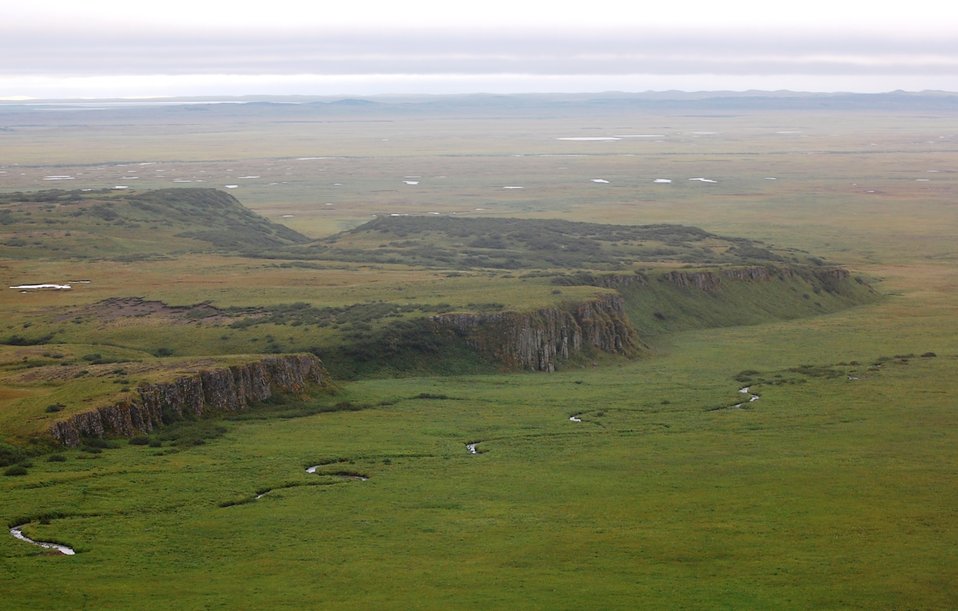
Joshua Green area

Izembek National Wildlife Refuge